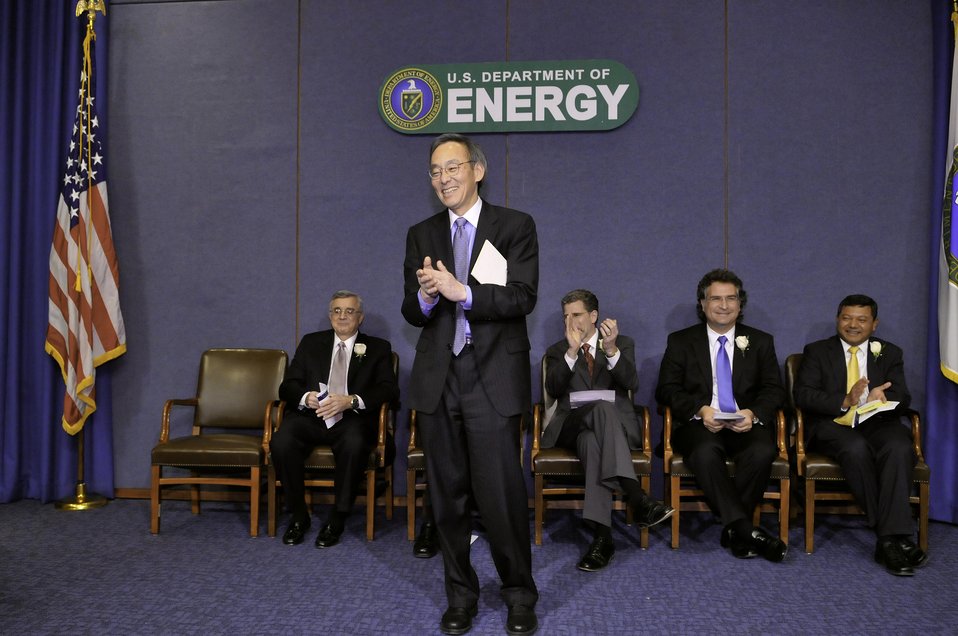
DEFC5~1